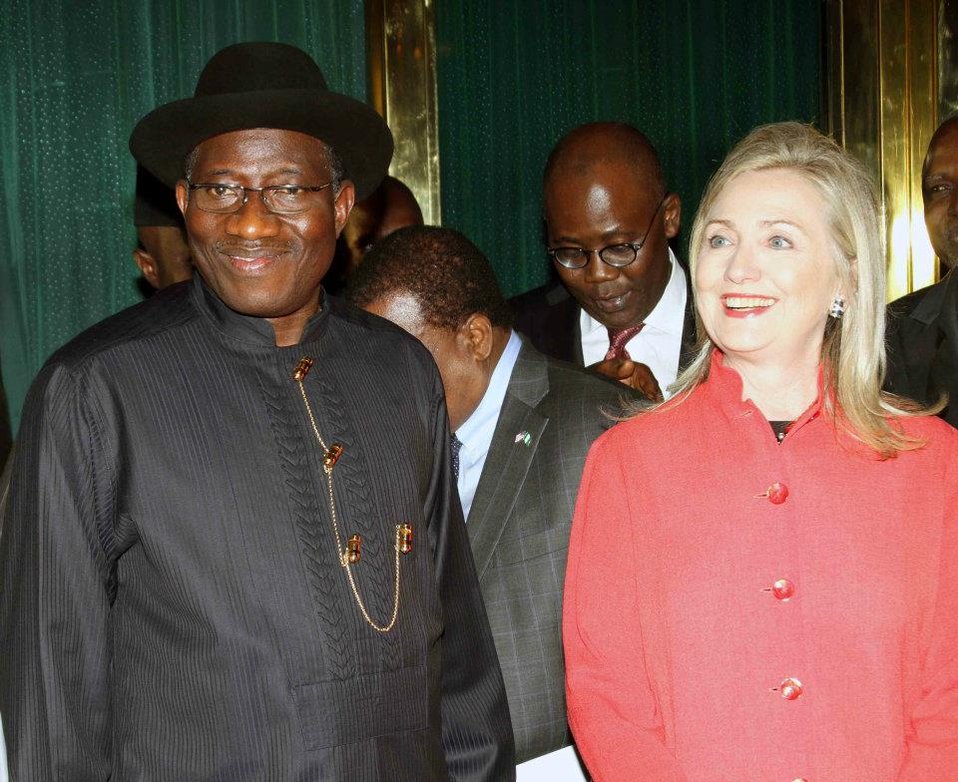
Secretary Clinton Meets With Nigerian President Goodluck Jonathan

U.S. Secretary of State Hillary Rodham Clinton meets with Nigerian President Goodluck Jonathan at the Presidential Villa in Abuja, Nigeria, on August 9, 2012.